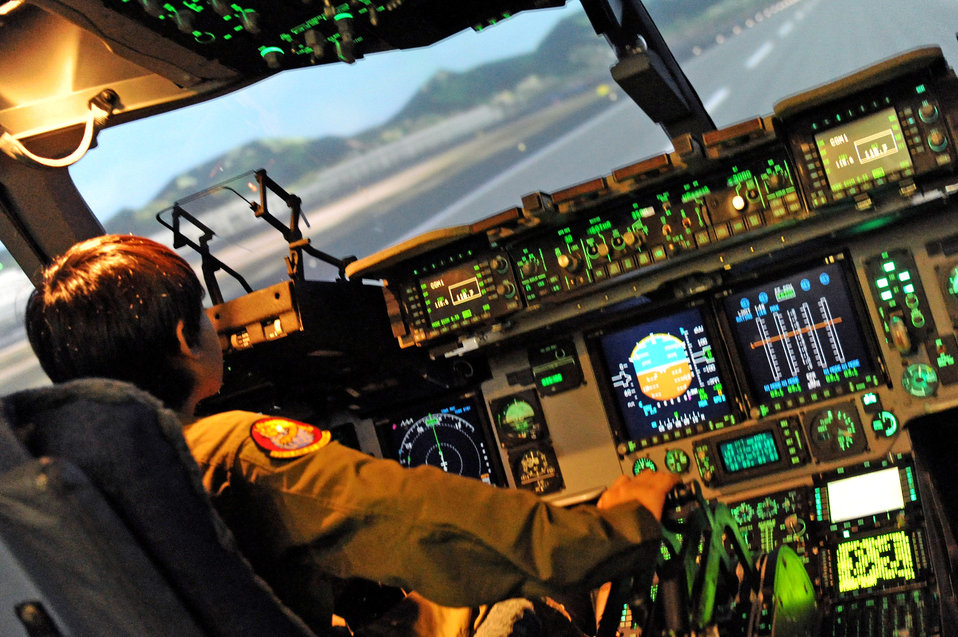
11-year old becomes a pilot

11-year-old Ryder Lum flies a C-17 Globemaster III simulator Oct. 29, 2010, during his visit to Joint Base Pearl Harbor-Hickam, Hawaii. Ryder was part of the 535th Airlift Squadron's quarterly Pilot for a Day program, which allows children with catastrophic disorders or illnesses to experience a day in the life of an Air Force pilot.